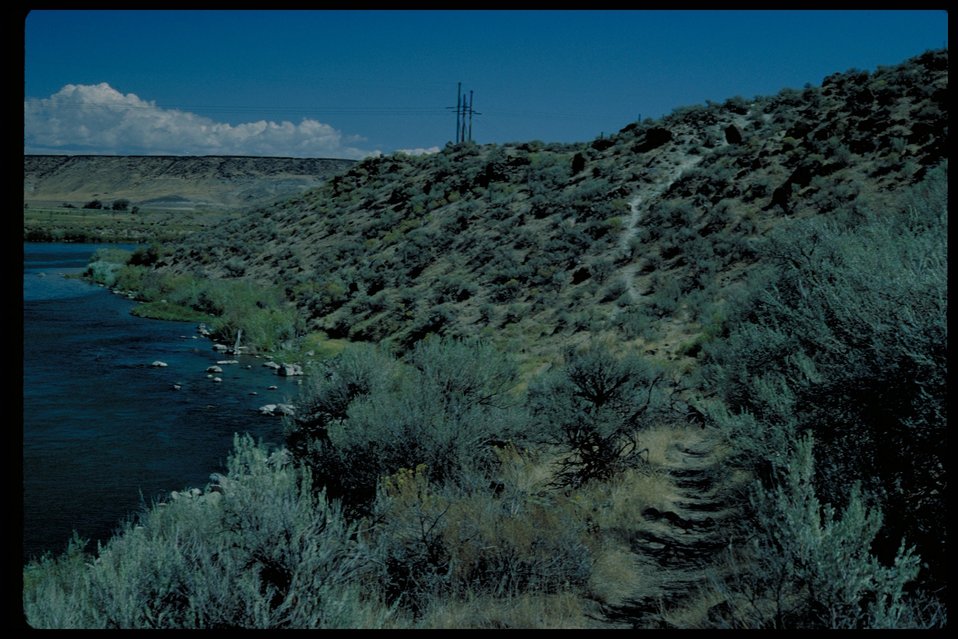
The Narrows Oregon Trail Lower Snake River District